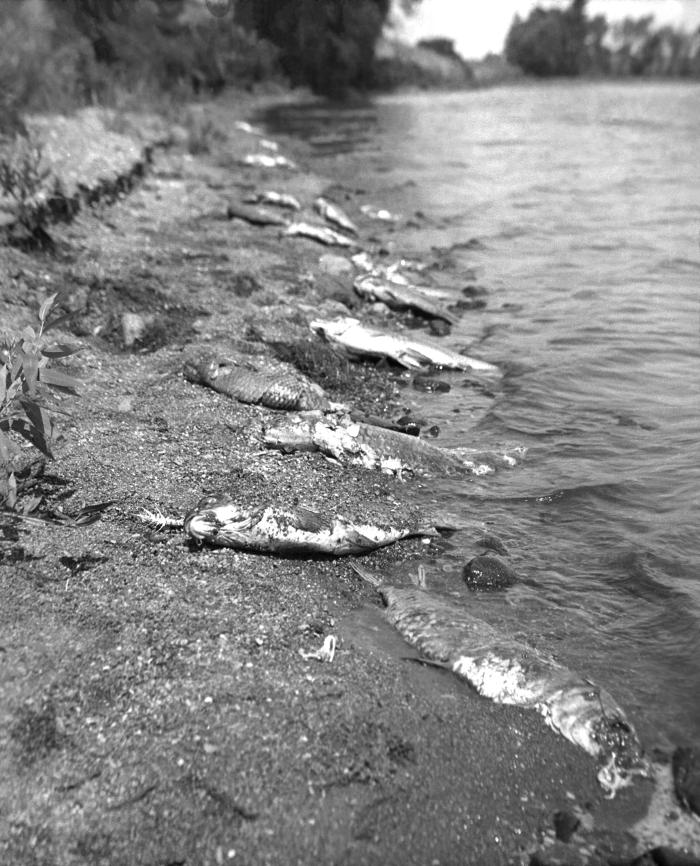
This historic 1934 photograph revealed an accumulation of dead carp that had washed up on the shore of Lake Byllesby, Minnesota. The fish were killed by pollution that fouled the lake.